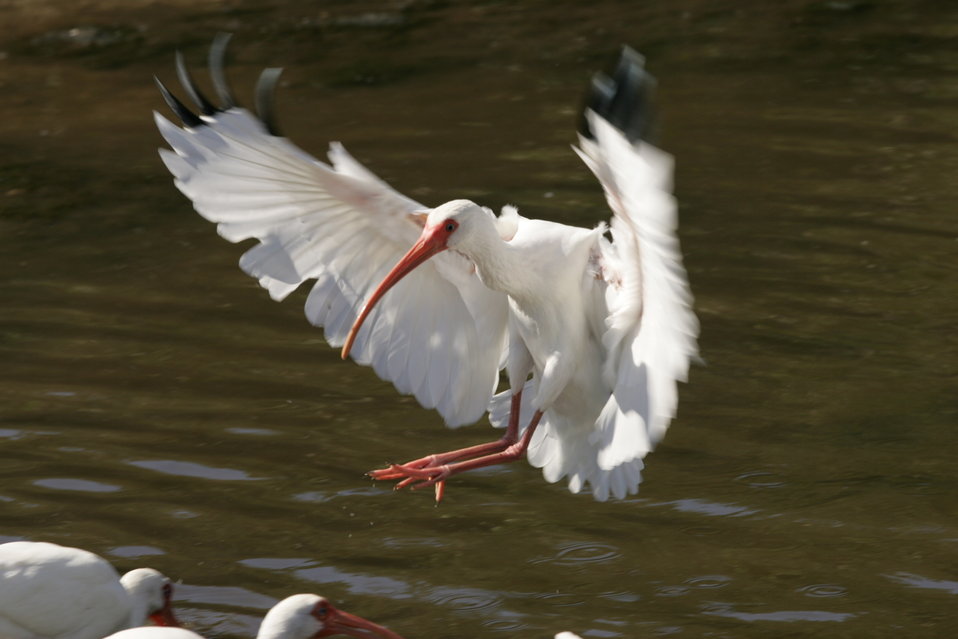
White Ibis, J.N. 'Ding' Darling NWR

White Ibis at J.N. 'Ding'Darling National Wildlife Refuge, Florida.